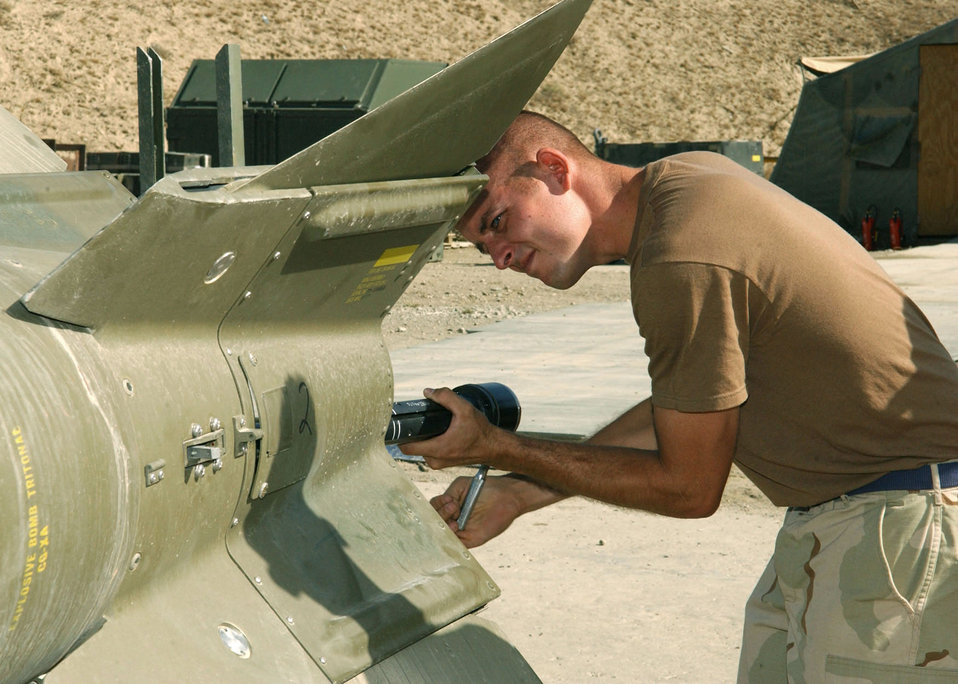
Bagram Airmen build bombs for better tomorrow

BAGRAM AIR BASE, Afghanistan -- Tech. Sgt. Daniel Hamilton works at retracting the fins on a guided bomb. Sergeant Hamilton is an Air Force reservist deployed to Afghanistan from Naval Air Station Joint Reserve Base New Orleans. He is a conventional munitions crewmember assigned to the 455th Expeditionary Aircraft Maintenance Squadron ammunitions unit.